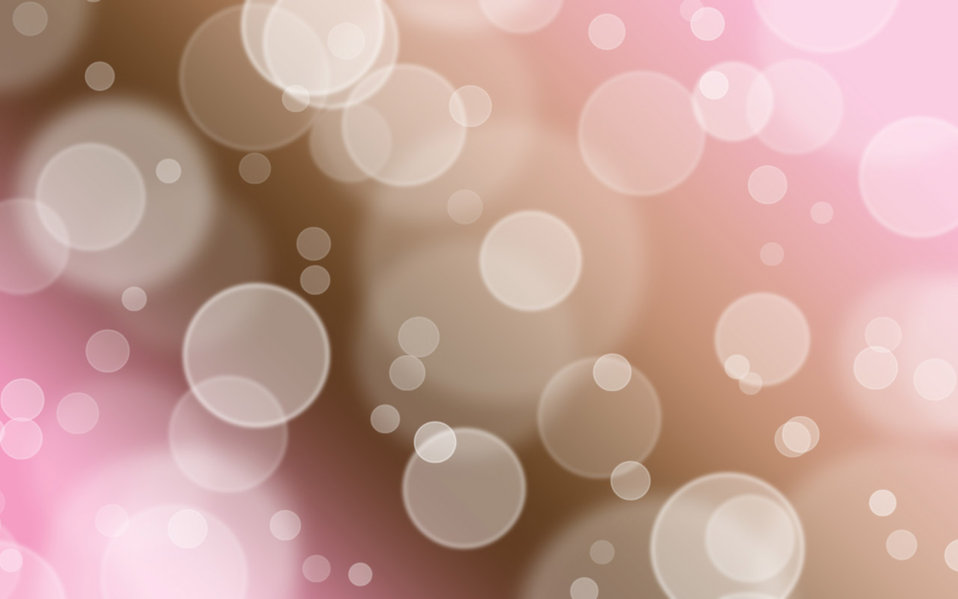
Neopolitan bubbles

Pretty background done in neopolitan colors. resolution 1920x1200..